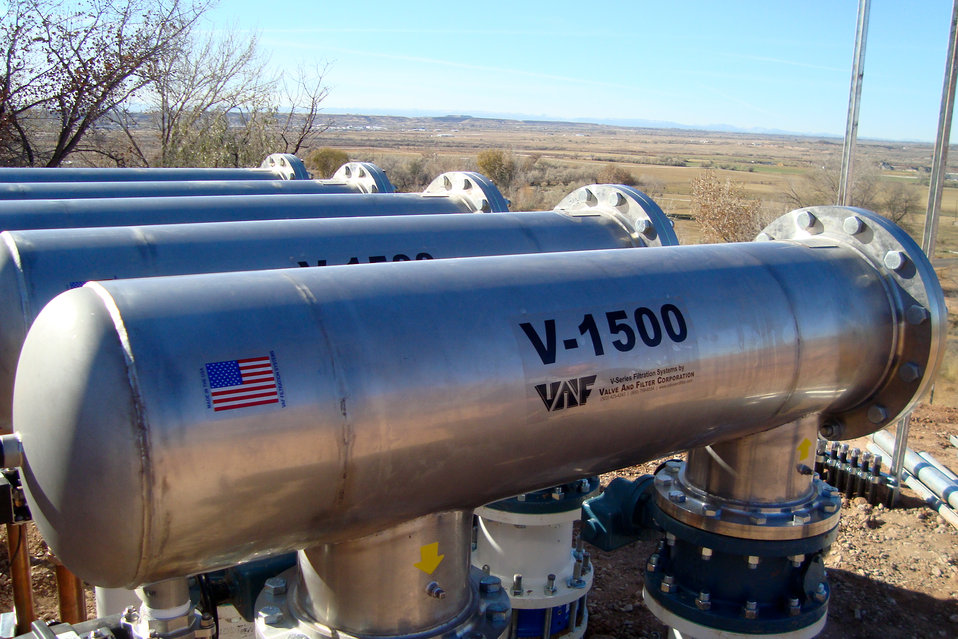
Sand and debris water-filters in Roosevelt, Utah

Five newly constructed tanks, shown January, 2012, will be used to filter sand and debris out of water for use by a rural community in Roosevelt, Utah. The water filtration project was part of the U.S. Army Corps of Engineers Sacramento District’s Section 595 program, which has assisted over 30 rural communities with critical water and wastewater infrastructure improvements since 2005.